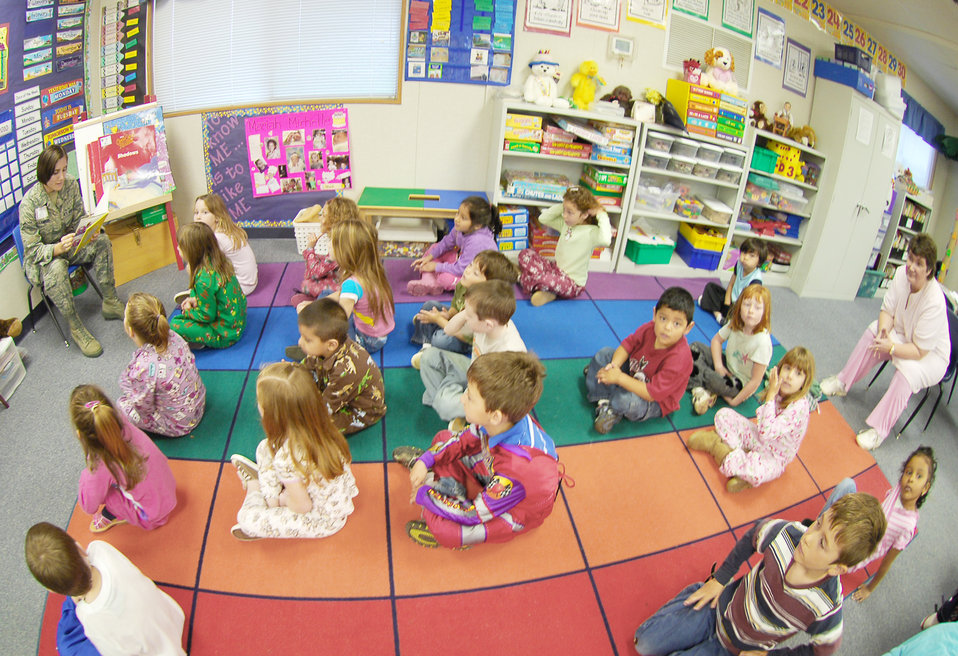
Beale Airmen 'Read Across America'

Airman Hayley Lambert reads a Dr. Suess book to children at Arboga Elementary School, March 2, 2010, at Beale Air Force Base, Calif. Airman Lambert took part in a nationwide event Read across America, which happens around Dr. Suess's birthday. Airman Lambert is from the 9th Communications Squadron.